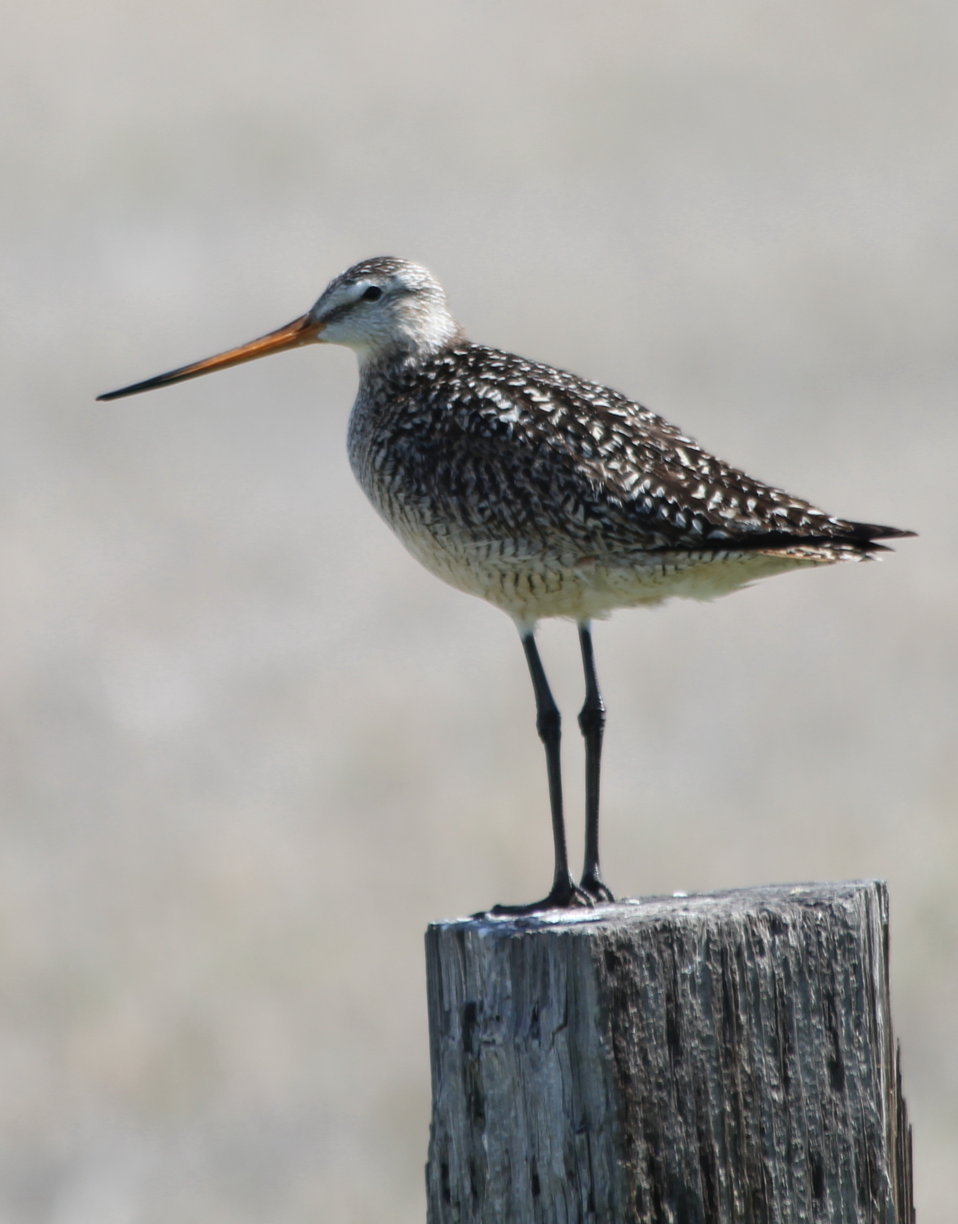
Marbled Godwit

A common shorebird of the prairies, they nest in the uplands. Their raucous calls can be heard near prairie wetlands.